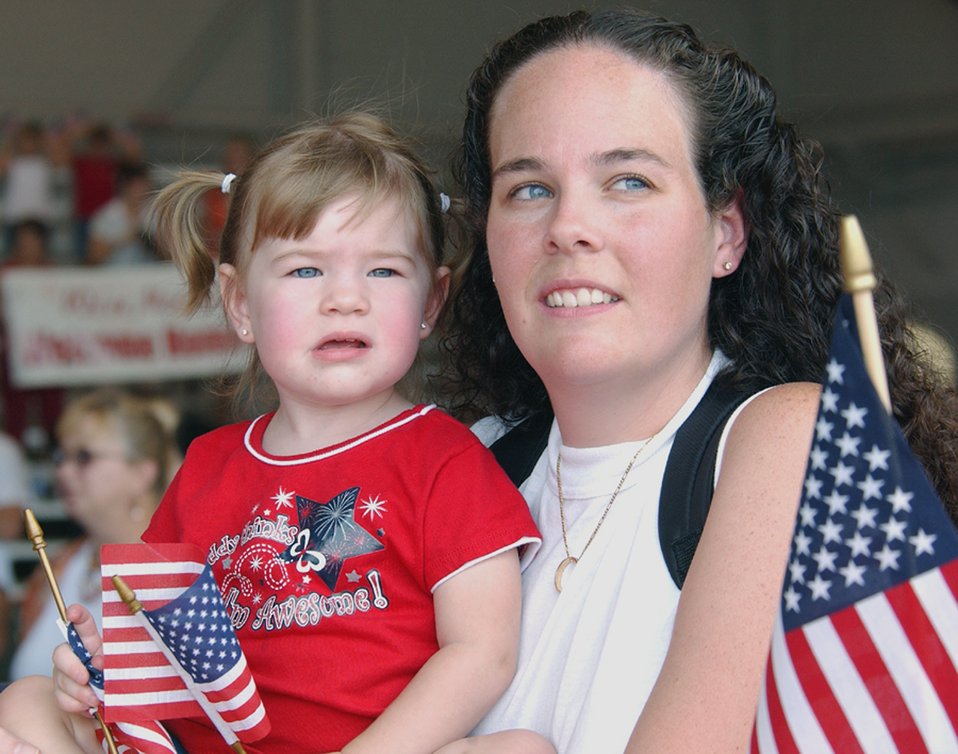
Happy holiday homecoming

Melanie Mercer and her daughter, 19-month-old Kaylee, scan the sea of tan uniforms trying to catch the first glimpse of Tech. Sgt. Matthew Mercer returning home July 4 to Hurlburt Field, Fla. More than 200 Airmen returned from deployments in support of Operations Iraqi and Enduring Freedom on Independence Day. Sergeant Mercer is from the 1st Special Operations Aircraft Maintenance Squadron.